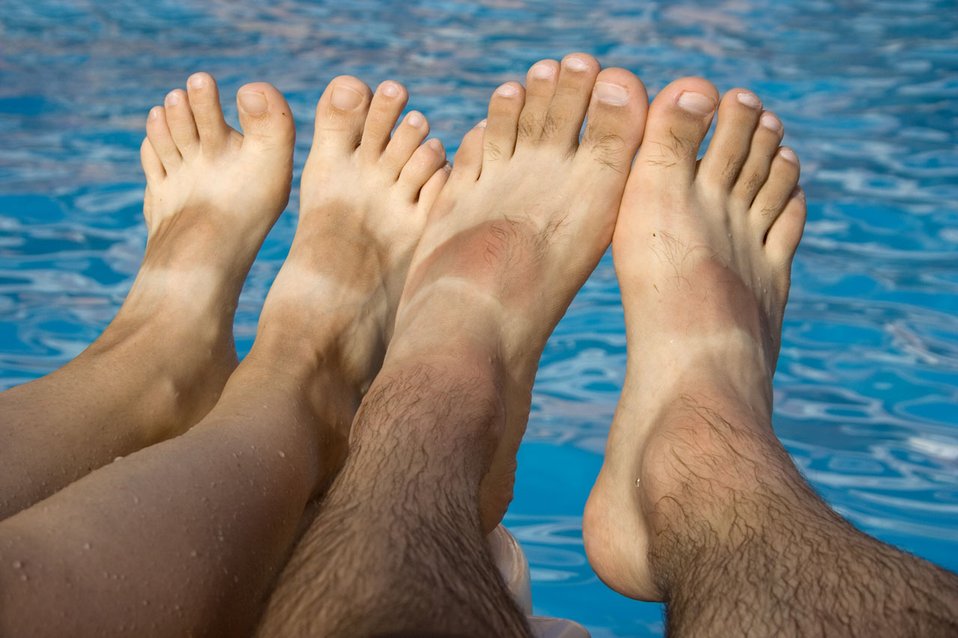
Feet

Funny tanned feet.